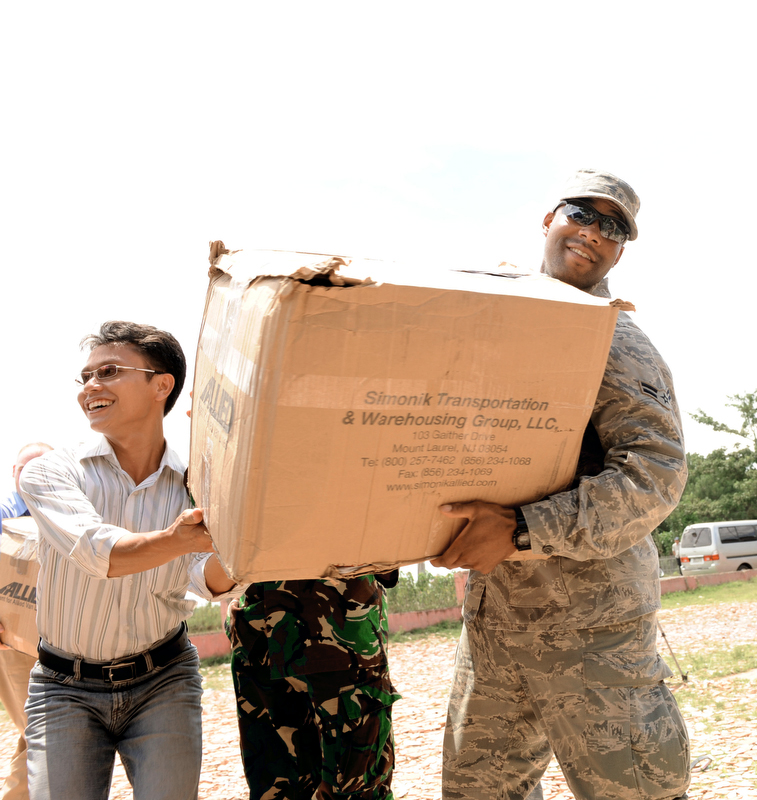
Cope West 2010

Airman 1st Class Brian Ellis helps unload more than 1,200 pounds of clothes, toys and sports equipment for children at a local elementary school April 21, 2010, in Lanud Gorda Binuang, Indonesia. The donations came from Yokota Air Base, Japan, where Airman Ellis is assigned to the 374th Logistics Readiness Squadron.